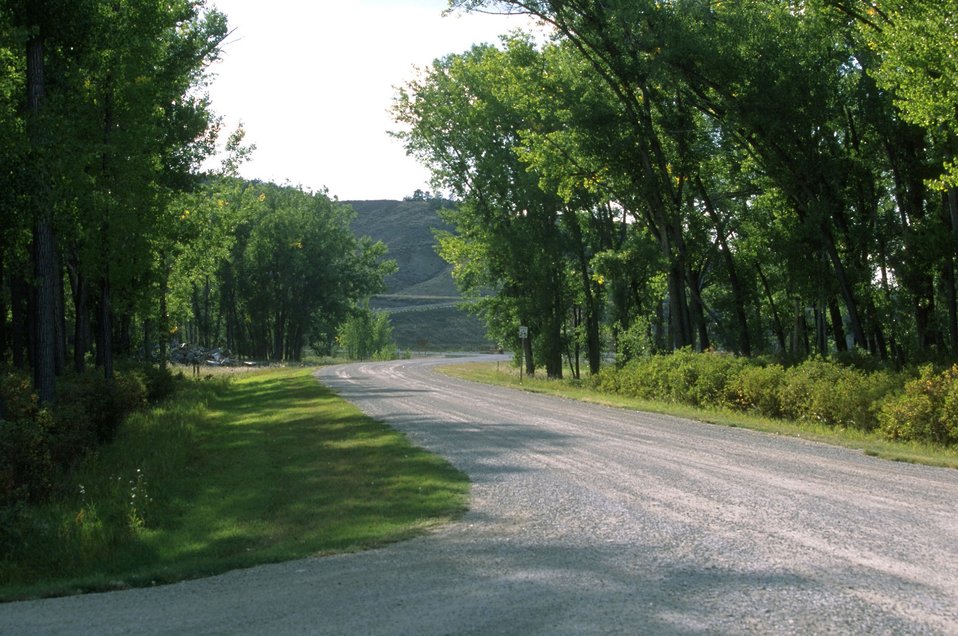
Kipp Recreation Area